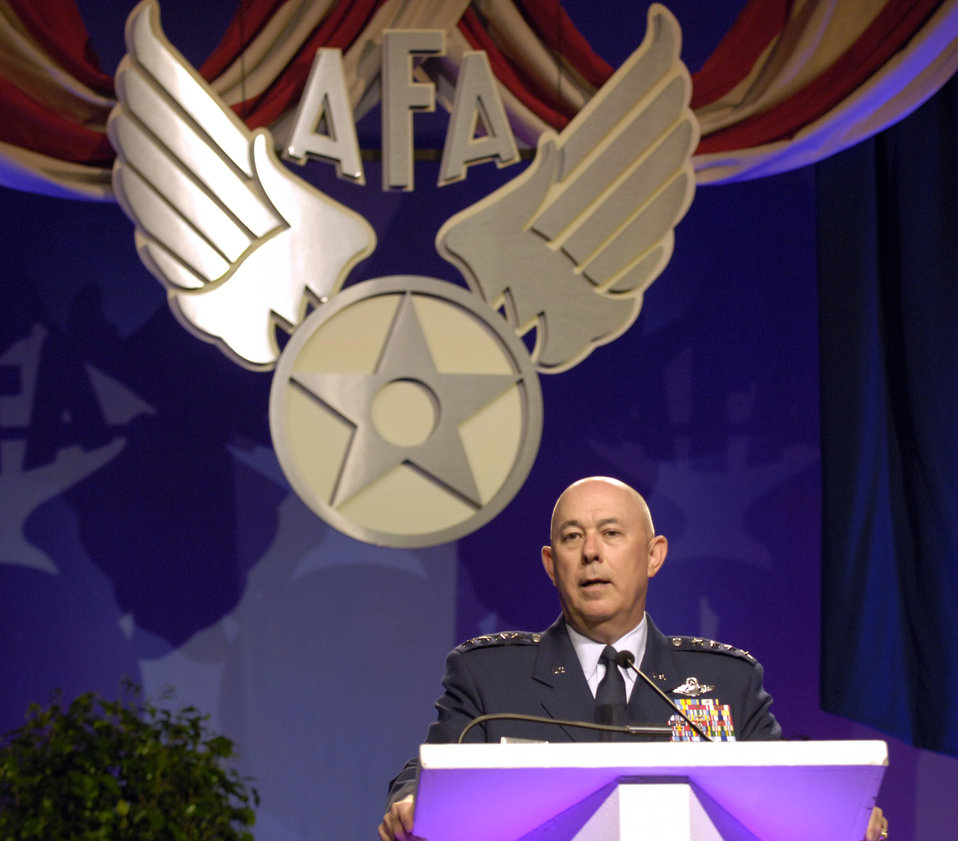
Air & Space Conference 2005

WASHINGTON -- Air Force Chief of Staff Gen. T. Michael Moseley welcomes attendees to the opening ceremonies of the 2005 Air and Space Conference and Technology Exposition here Sept. 12.